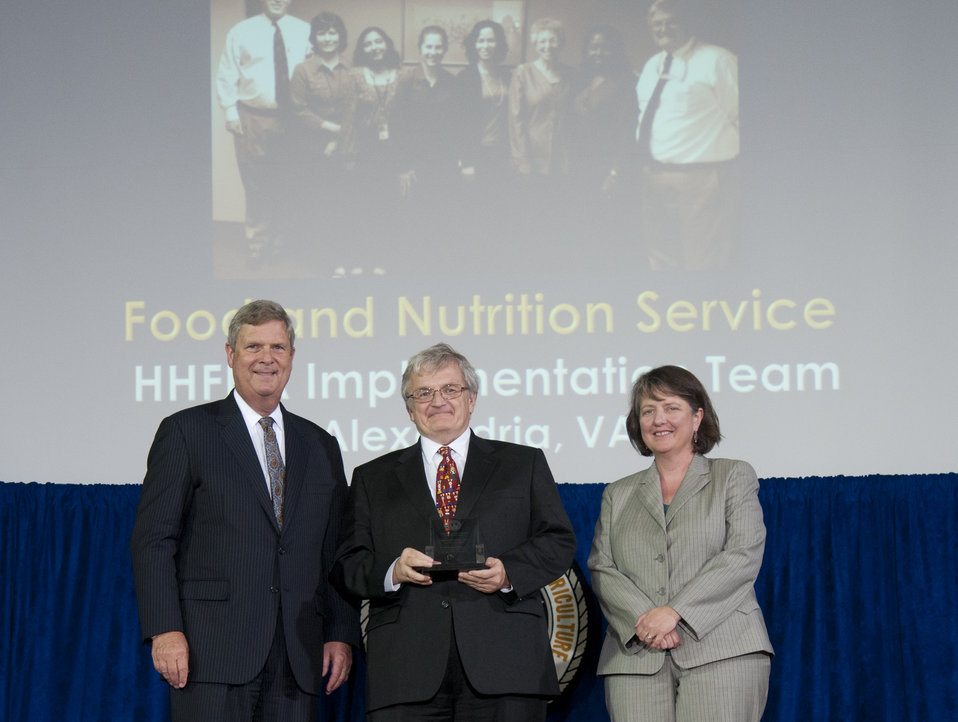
Agriculture Secretary Tom Vilsack and Agriculture Deputy Secretary Kathleen Merrigan present the Secretary’s Honor Award to group leader Healthy, Hunger-Free Kids Act (HHFKA) Implementation Team Food and Nutrition Service (FNS) Thomas O'Connor at the U.S. Department of Agriculture (USDA) 64th Annual Honor Awards Ceremony in Washington, D.C. on Wednesday, Sept. 12, 2012. The HHFKA Implementation Team provided outstanding efforts supporting the implementation of the Healthy, Hunger-Free Kids Act of 2010.